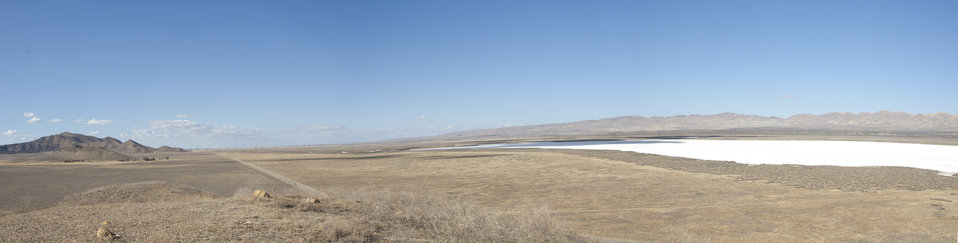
Carrizo Plain Looking North from Soda Lake Overlook